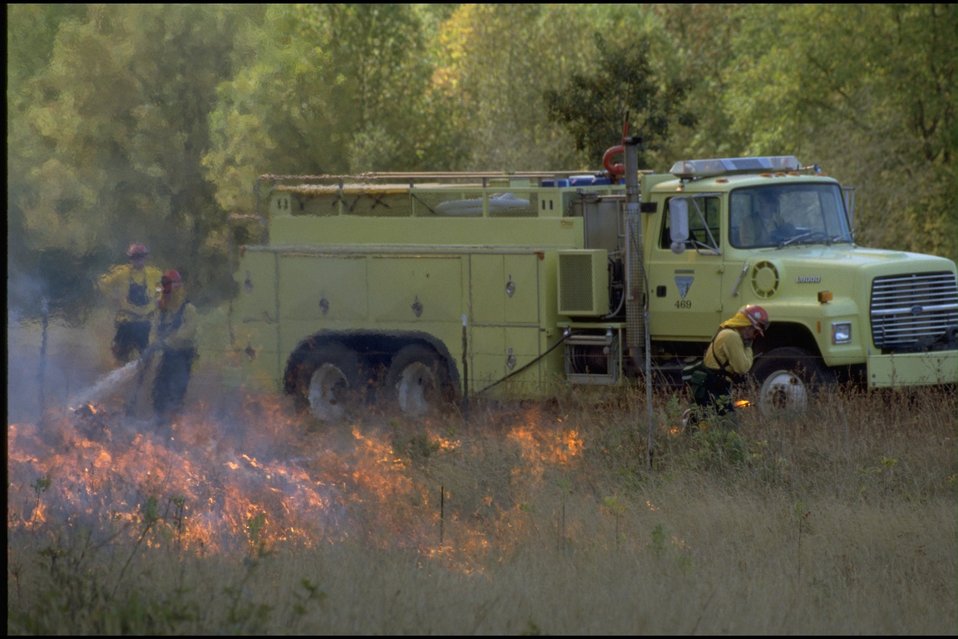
Long Tom ACEC burn.